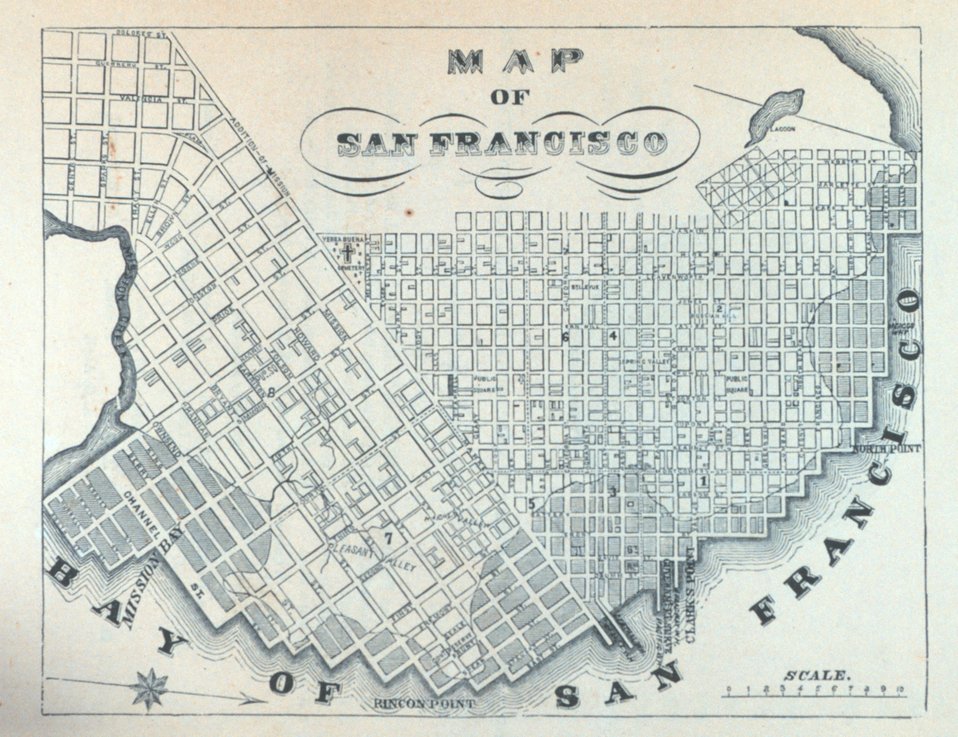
Map of San Francisco. In: 'The Annals of San Francisco'. Frank Soule, John Gihon, and James Nesbit. 1855. Frontispiece. D. Appleton & Company, New York. F869.S3.S7 1855.